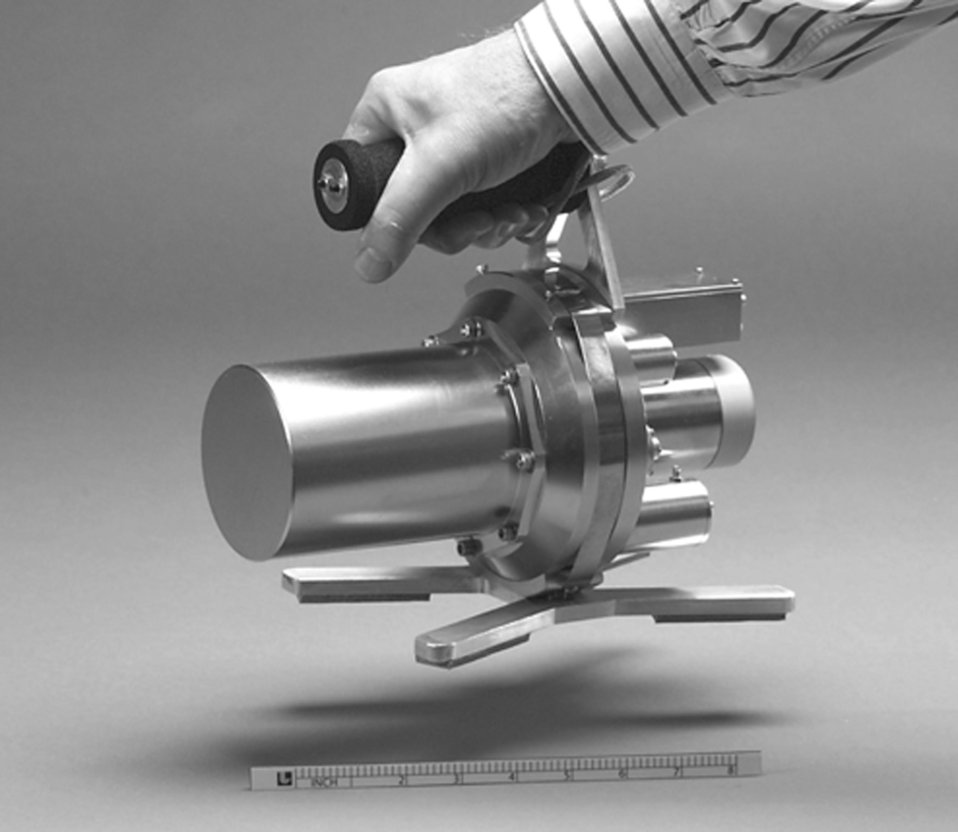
HAND HELD RADIATION DETECTOR.

IN A COLLABORATION BETWEEN LBNL AND LLNL, SCIENTISTS HAVE DEVELOPED A MOBILE, HAND HELD, MECHANICALLY COOLED GERMANIUM RADIATION SPECTROMETER THAT DETECTS SIGNATURE GAMMA-RAYS FROM RADIOACTIVE MATERIALS. RESEARCHERS SAY THE DEVICE, CALLED CRYO3, CAN DETERMINE THE TYPES OF RADIOACITVE MATERIALS NO MATTER WHERE THEY MIGHT BE LOCATED, AT A BORDER CROSSING, IN AN AIRPORT OR EVEN ON A PERSON.